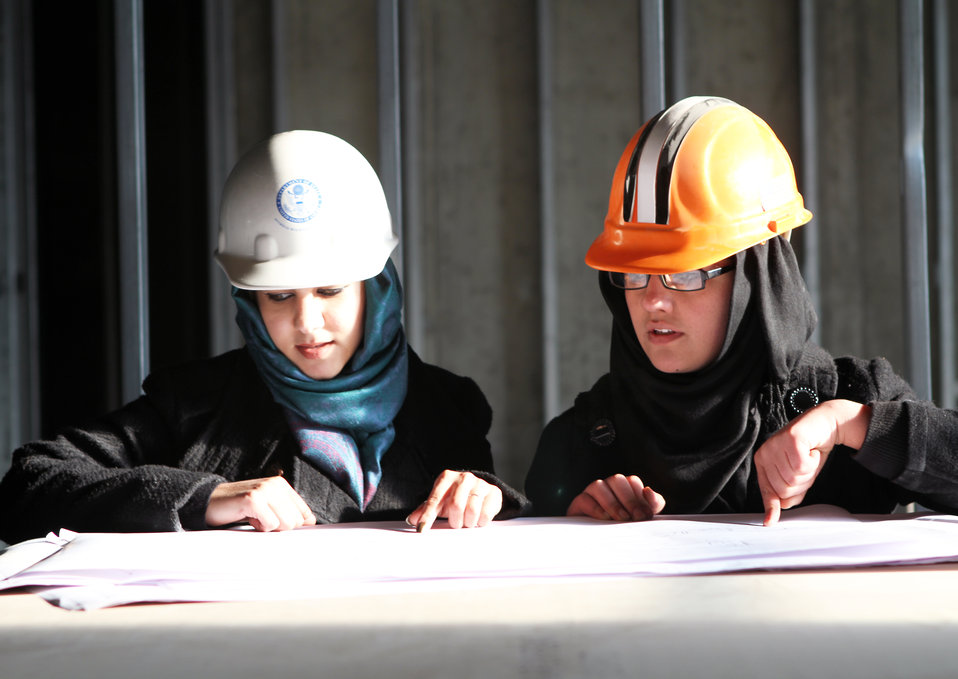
Two recent graduates from USAID’s Female Engineering Internship Program examine project design plans